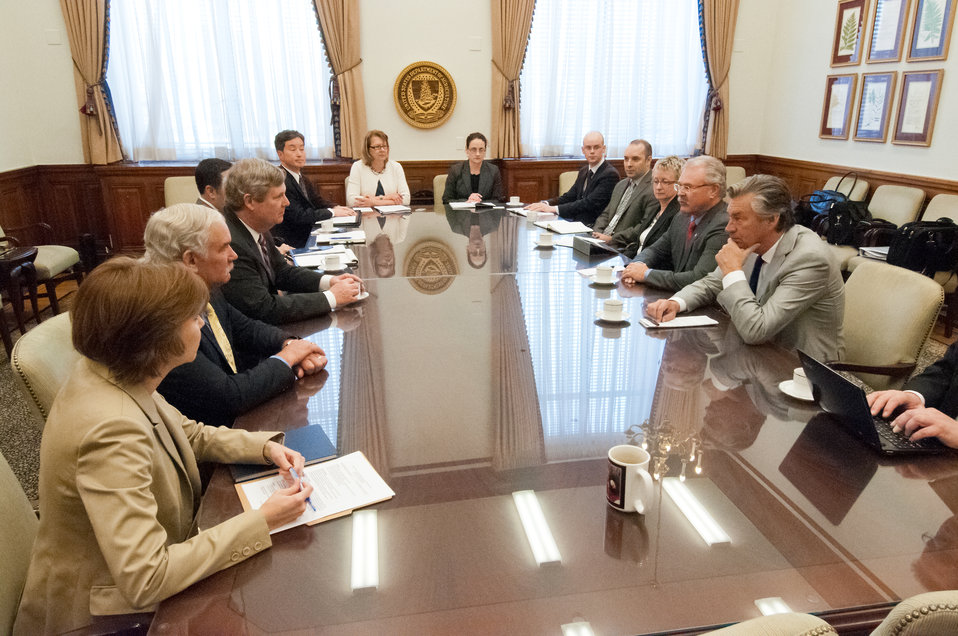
Agriculture Secretary Tom Vilsack met with Gerry Ritz, Canadian Minister of Agriculture and Canadian Ambassador Gary Doer to discuss cooperation, economics and trade in Washington, DC, Tuesday, April 9, 2013. Accompanying Secretary Vilsack were: Michael Scuse, Under Secretary Farm and Foreign Services, Deputy Under Secretary Darcy Vetter, Farm and Foreign Services, Max Holtzman Senior Advisor to the Secretary, Brian Ronholm, Deputy Under Secretary, Food Safety and Ann Bartuska, Deputy Secretary, Research Education and Economics. Accompanying Minister Ritz were: Ambassador Gary Doer, Assistant Deputy Minister Tina Namiesnoiwski, Policy Advisor Dustin Pike, Press Secretary Jeffrey English and Deputy Director Claudine Pagé.